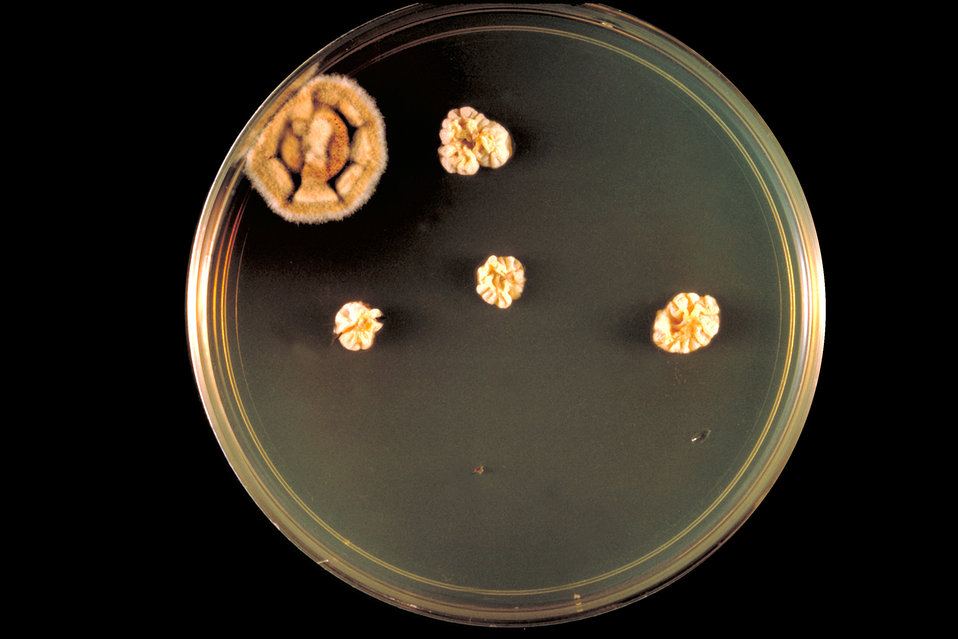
This image shows a C&C agar plate culture with colonies of the fungusTrichophyton concentricum.